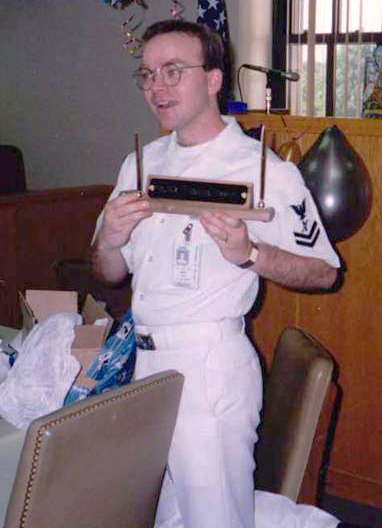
Thomas Irwin, Office of the Director, served in the Navy from 1989 to 1995. He was stationed at Naval Air Station Oceana (Virginia Beach, Virginia); USS Theodore Roosevelt (CVN-71); National Naval Medical Center (Bethesda, Maryland). He attained the rank of Legalman 3RD Class (LN3).